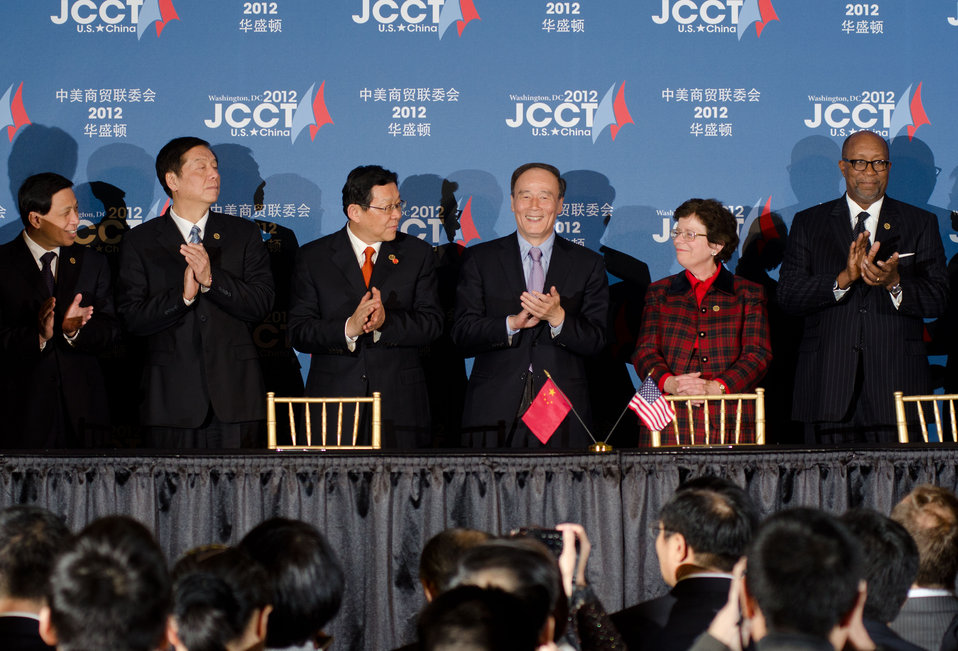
The principal leaders from the Chinese delegates and U.S. hosts, (L to R) China’s Ambassador to the U.S. Zhang Yesui, Vice Minister of Industry and Information Technology Liu Lihua, Chinese Minister of Commerce Chen Deming, Chinese Vice Premier Wang Qishan, Acting U. S. Commerce Secretary Rebecca Blank, U.S. Trade Representative Ron Kirk and U.S. Ambassador to China Gary Locke at the 23rd Session of the U.S. China Joint Commission on Commerce and Trade (JCCT) are introduced and applaud the achievment it took to be able to witness the signing of The Second Phase Report on the Statistical Discrepancy of Merchandise Trade between the U.S. and China, and a Memorandum of Understanding between the U.S. Trade and Development Agency and the Ministry of Commerce of the People’s Republic of China in Support of U.S.-China Trade Cooperation, at the Andrew W. Mellon Auditorium in Washington, D.C. on Wednesday, Dec. 19, 2012, in Washington, D.C. The JCCT holds high-level plenary meetings on an annual basis to review progress made by working groups that focus on a wide variety of trade issues. These working groups meet throughout the year to address topics such as intellectual property rights, agriculture, pharmaceuticals and medical devices, information technology, tourism, commercial law, environment, and statistics.